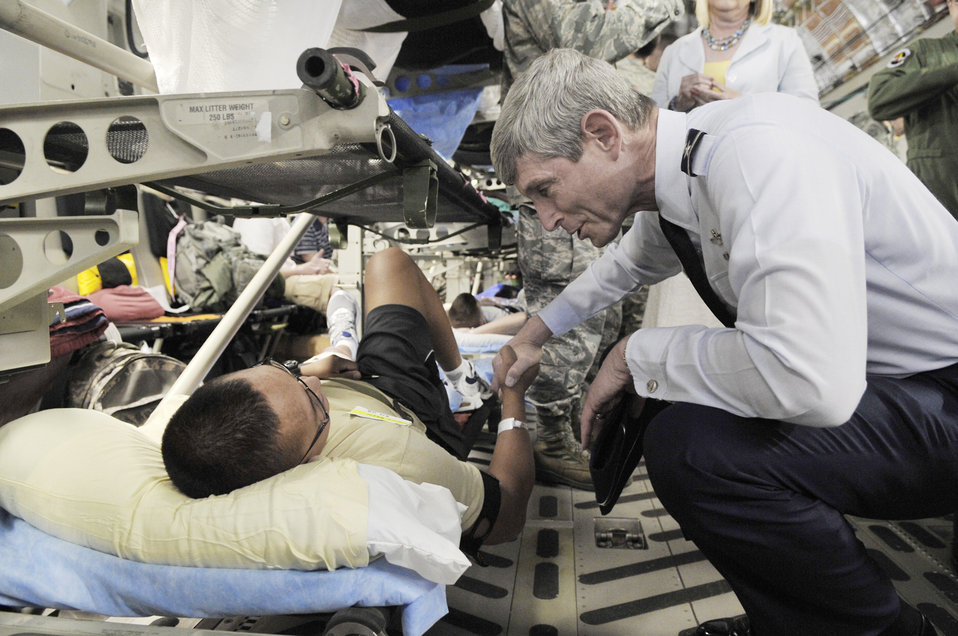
Get better soon

Air Force Chief of Staff Gen. Norton A. Schwartz talks with Senior Airman Bren Mejia during an aeromedical evacuation mission Aug. 7, 2009, on the Andrews Air Force Base, Md., flightline. The 779th Medical Group at Andrews has the busiest aeromedical staging facility in the continental United States, caring for more than 100 wounded and ill warriors returning each week.